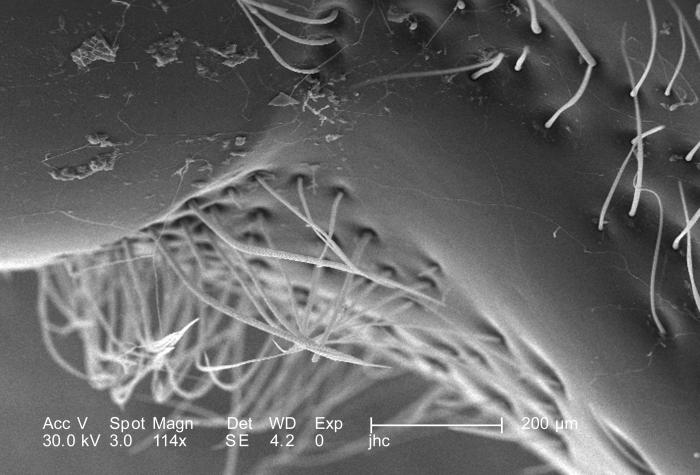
Under a low magnification of 114X, this scanning electron micrograph (SEM) depicted some of the exoskeletal morphologic characteristics displayed on the head region of an unidentified beetle found deceased in the suburbs of Decatur, Georgia. In this particular view, there seems to be numerous 'hairs' growing up, out of the organism's exoskeletal surface. These structures are sensorial in nature, and are known as 'setae', providing the insect with information about its environment including thermal changes, changes in wind direction, and the presence of chemicals such as poisons or pheromones. These setae are not composed of keratin, as in the case of mammals, but like the exoskeleton itself, are composed of chitin.